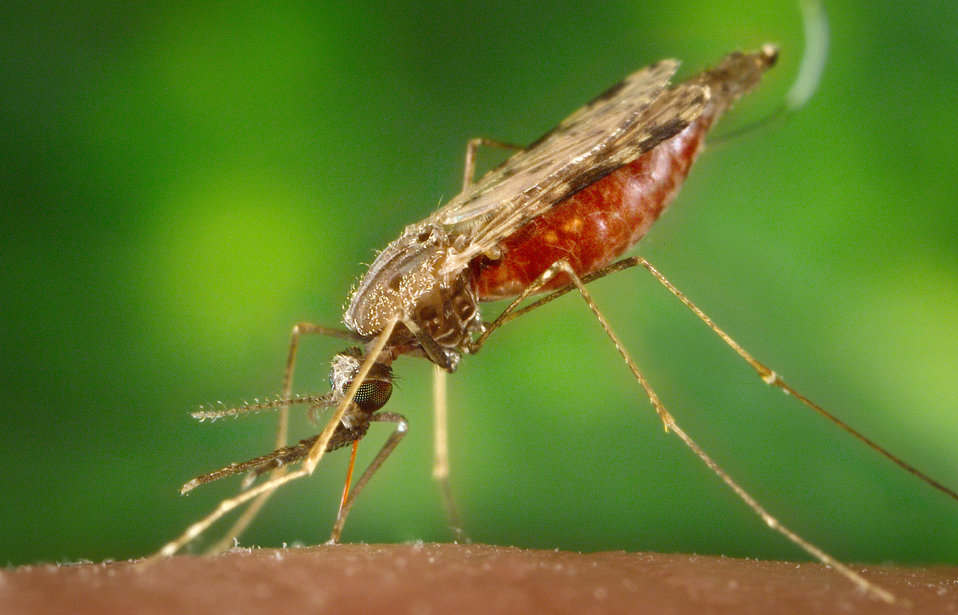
This 2005 photograph depicted a female Anopheles albimanus mosquito while she was feeding on a human host, thereby, becoming engorged with blood.